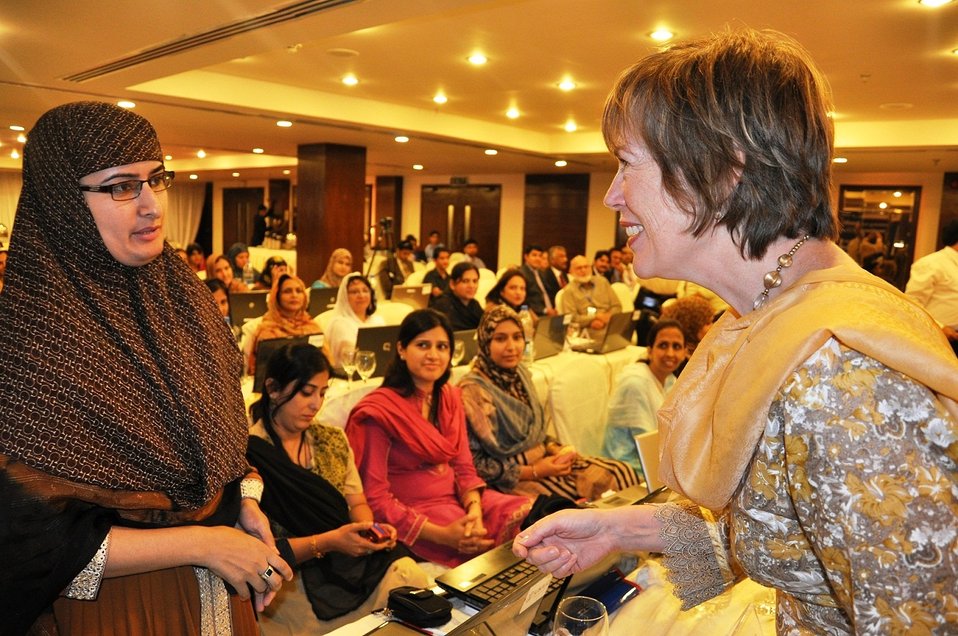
26 Spet, 2011 - US Ambassadar Cameron Munter's wife Dr. Marilyn Wyatt interacting with IESCO Female IT Staff

The US Ambassador Cameron Munter's wife Dr.Marilyn Wyatt, chief guest of the workshop for training female IESCO staff in the IT discipline, interacting with the participants of the workshop. Dr. Marilyn Wyatt, also inaugurated the Power Improvement Program's website (www.pdip.pk) that was launched at the same event.